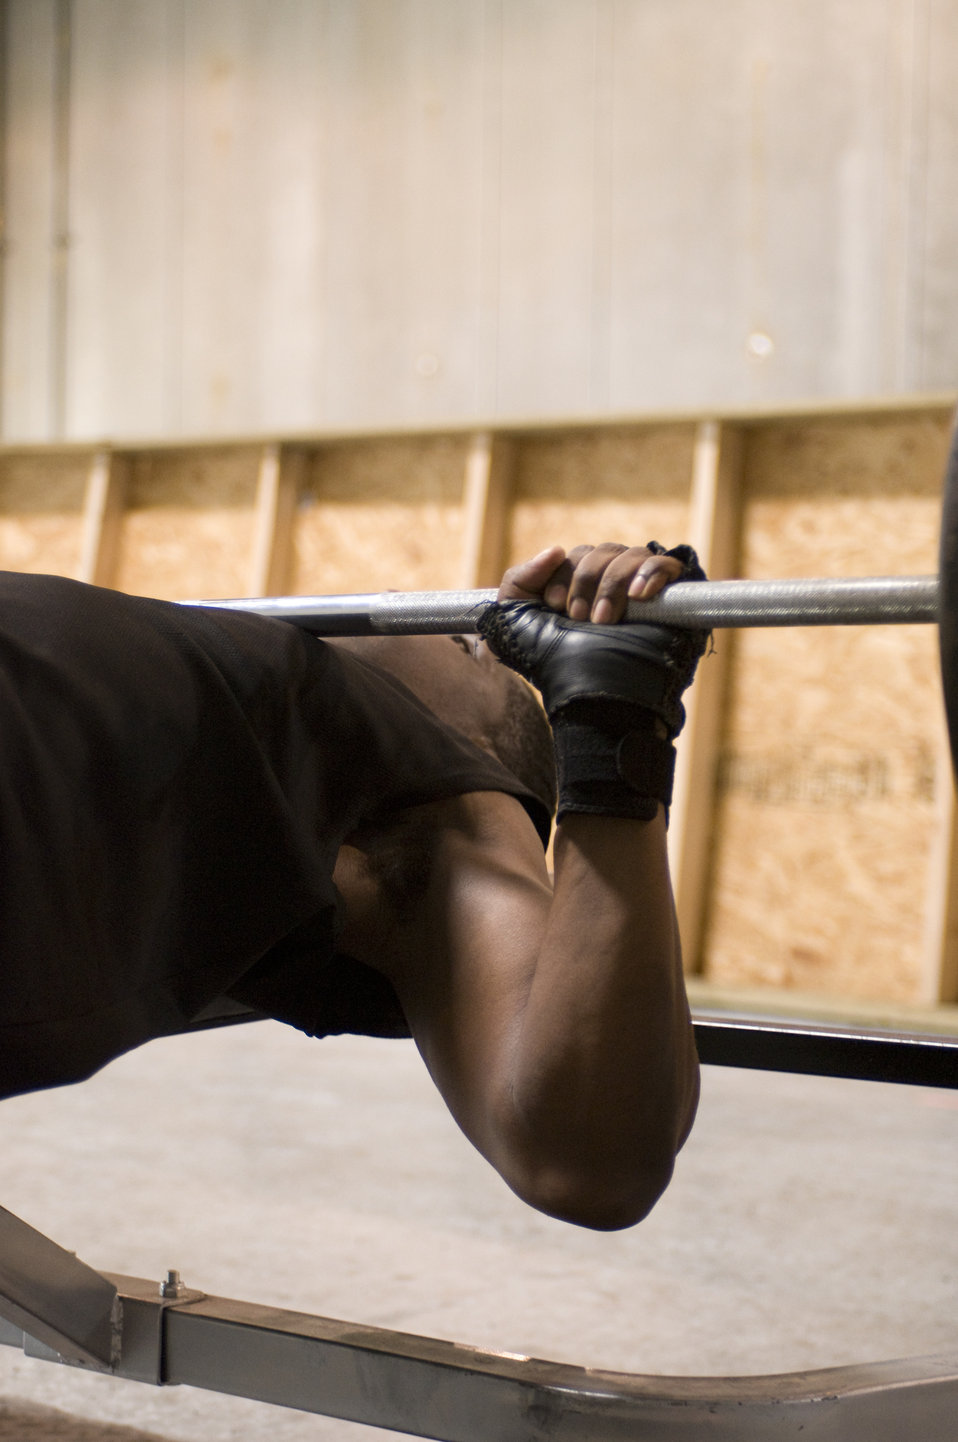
This man was inside a gymnasium performing various strength-training exercises. At this point in his exercise routine, he was performing bench presses. From this particular view, you can see only his left torso and arm. His left hand was wrapped around the bar, and he was at the low-pint, or mid-point of the repetition, where the weight bar was touching his upper chest, and he was about to push the weight upward by extending both his arms. Hopefully, he was also keeping well hydrated during his exercise regimen by drinking fresh water during his workout.